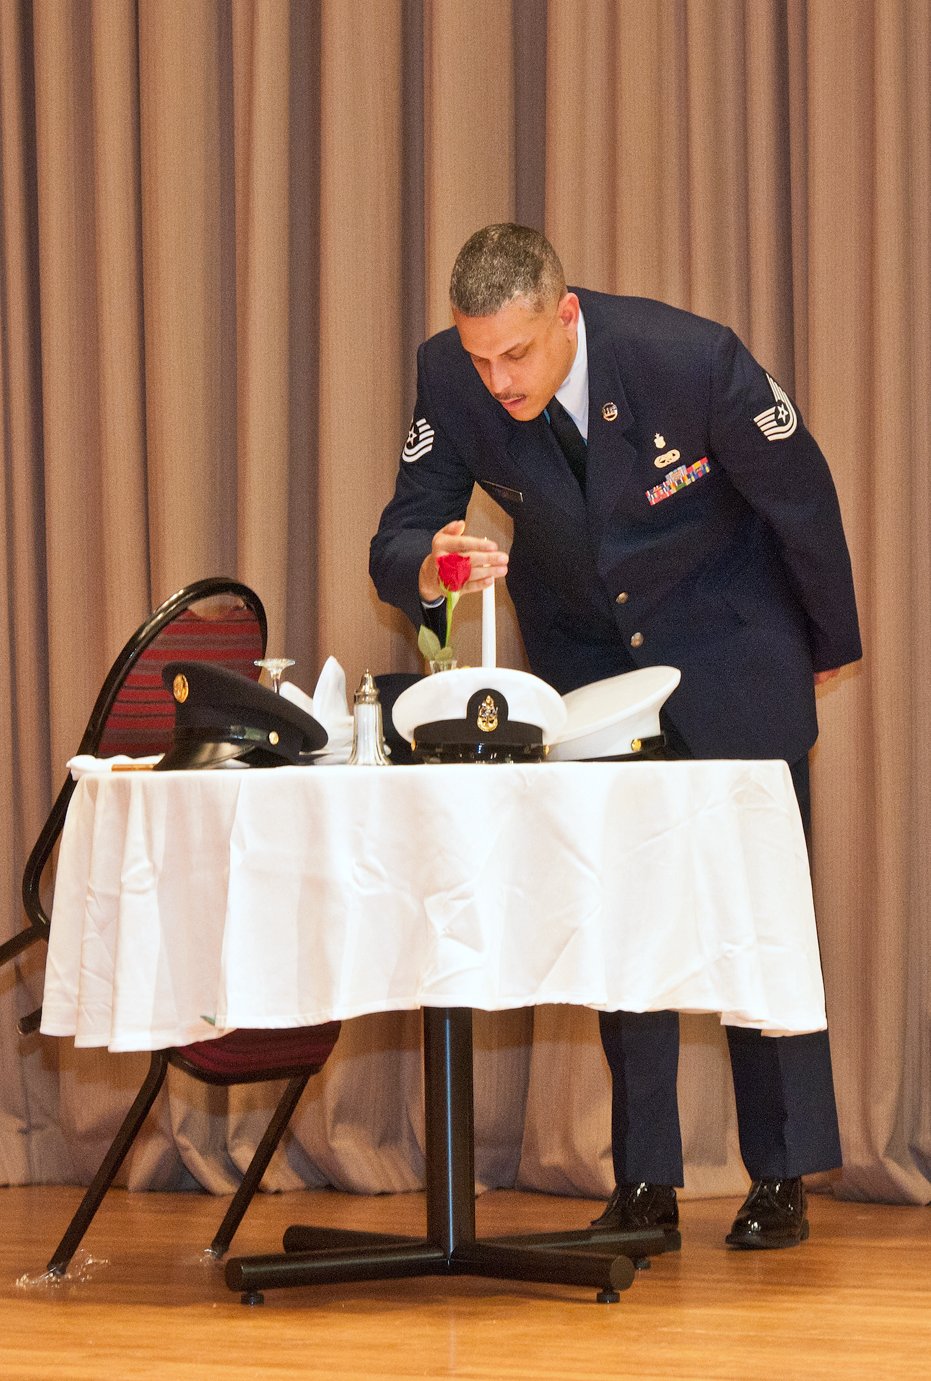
Air Force Tech Sergeant John Powell, 79th Medical Wing, Andrews Air Force Base, MD, extinguishes the candle after the POW/MIA Ceremony at the United States Department of Agriculture Veteran’s Day celebration in Washington, DC, Thursday, November 10, 2011. The table of the POW/MIA Ceremony offers an opportunity to remember those individuals who fought and died for our country and paid an incredible price to help preserve the freedoms we enjoy today. Yet, it is in remembering our fallen veterans that we are reminded of those whose fate is still unknown, those still listed as Prisoners of War and Missing in Action.